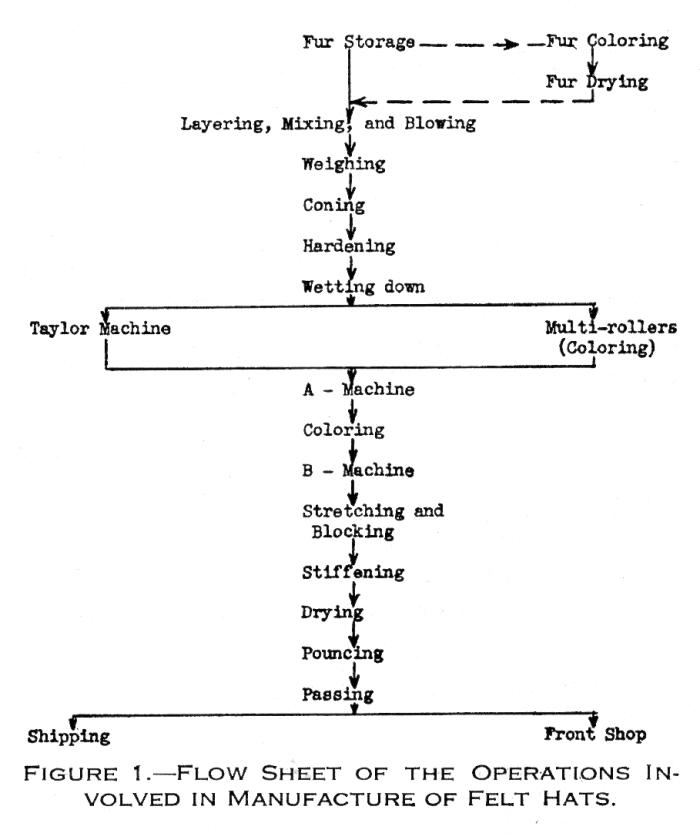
This historical image was provided by the Center for Disease Control's (CDC), National Institute for Occupational Safety and Health (NIOSH). Depicted, was a page from a 'Public Health Bulletin', No. 263, Fig. 1, 1941, which illustrated in the form of a flow chart, the step-by-step activities involved in the manufacture of hats using animal furs. It did not include the aspect of fur processing involving the potentially toxic chemical mercury nitrate, which rendered the fur suitable for manufacturing hats. If precautions were not taken, such as wearing a filtered breathing mask, or gloves, mercury exposure was quite likely, and could have lead to heavy metal poisoning, with severe pathologic neurological consequences.